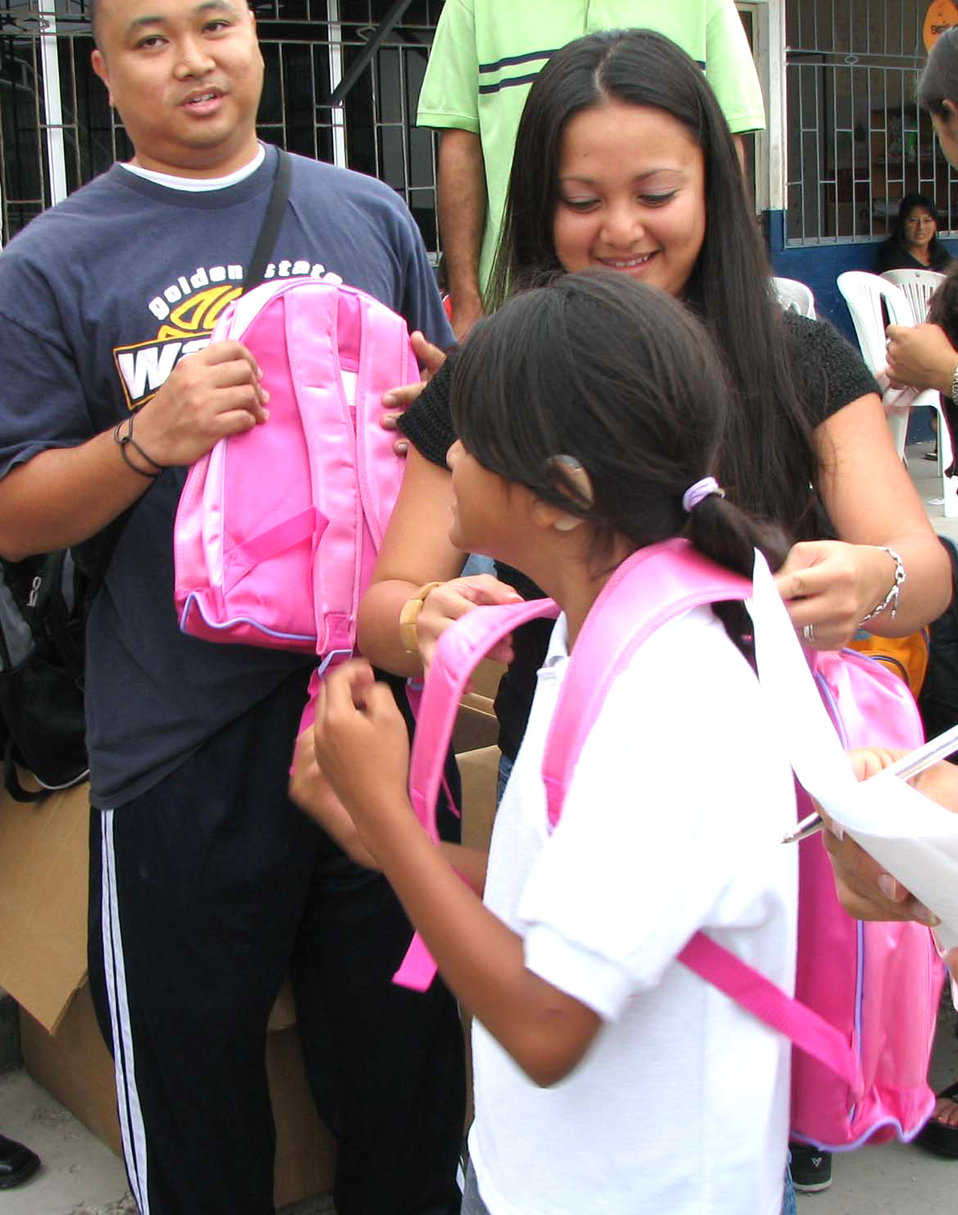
Location sings praises of first assigned chaplain's team

Senior Airman Mirella Santos gives packbacks to students at Angelica Flores School for the Handicapped in Manta, Ecuador. Providing community relations is a large part of the services the chapel team offers at Manta Forward Operating Location. Airman Santos is deployed from Ellsworth Air Force Base, S.D.